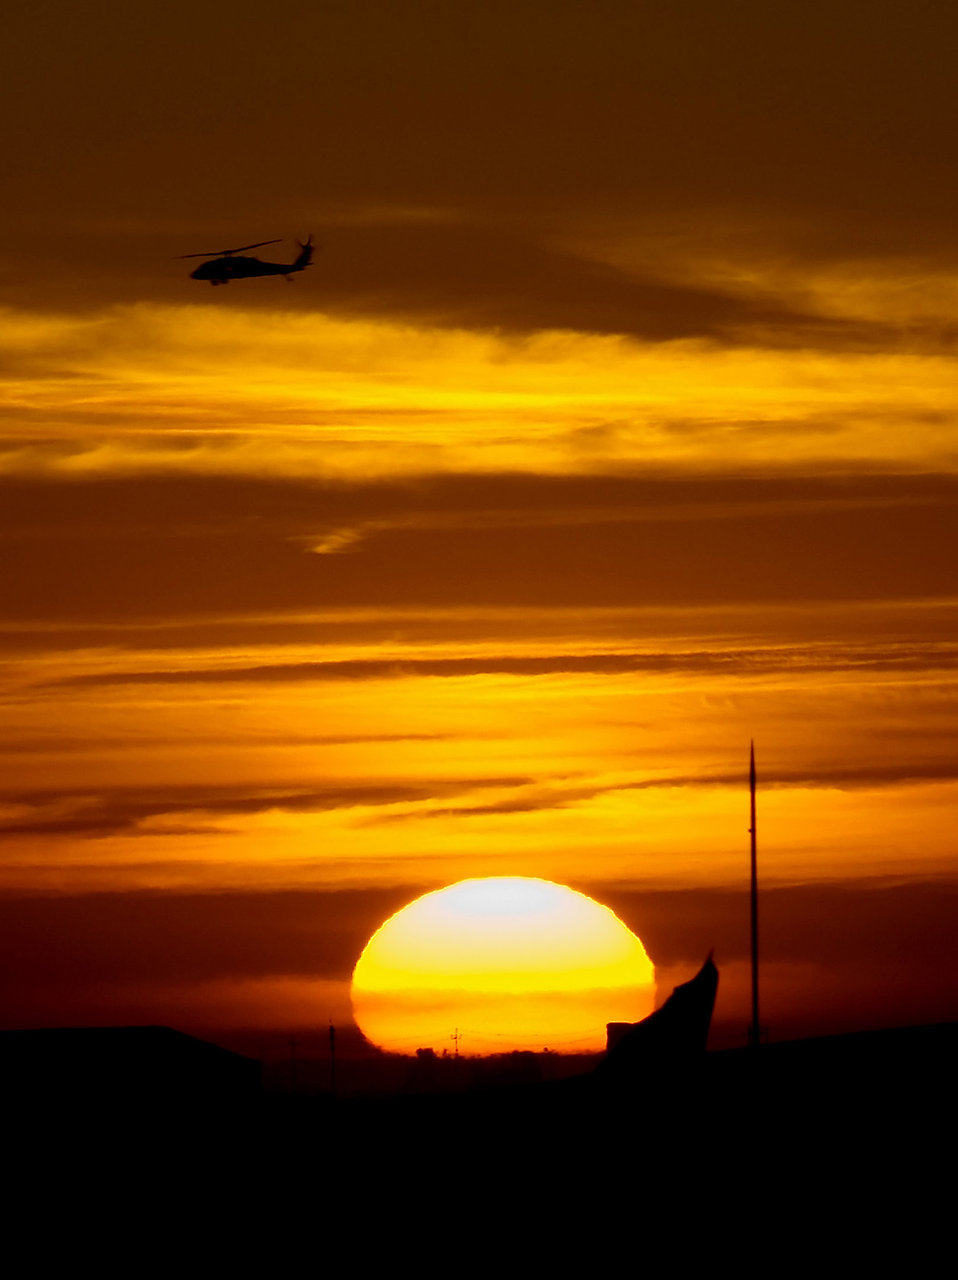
When the sun goes down, Balad heats up

A UH-60 Black Hawk helicopter flies over Joint Base Balad, Iraq, Dec. 18. The 332nd Air Expeditionary Wing at Balad is the most forward-deployed Air Force wing participating in Operation Iraqi Freedom, and its heritage is tied to the famous 332nd Fighter Group